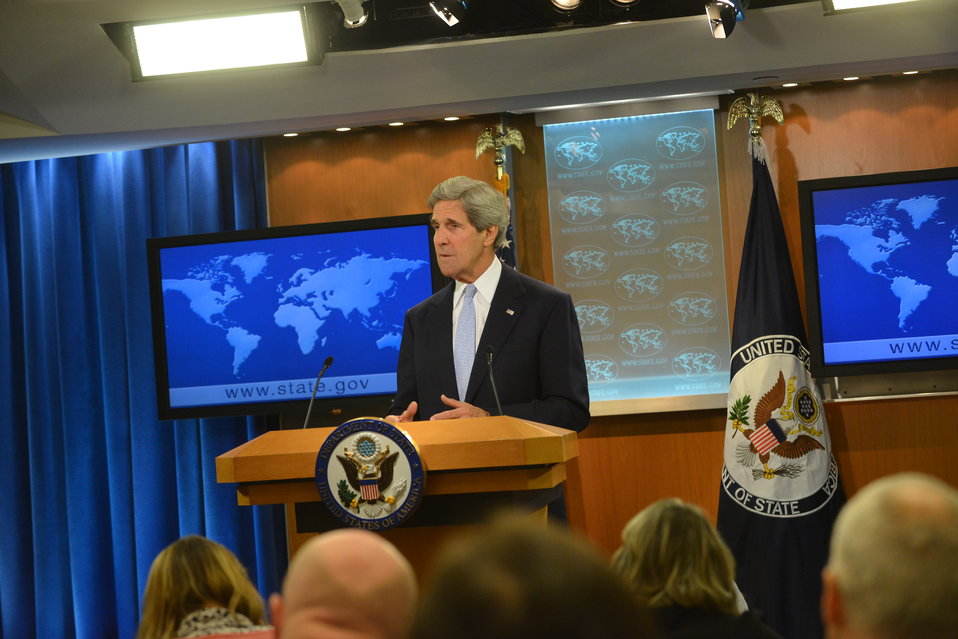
Secretary Kerry Announces the Appointment of Russ Feingold as the Special Envoy for the African Great Lakes Region and the Democratic Republic of the Congo

U.S. Secretary of State John Kerry announces the appointment of Russ Feingold as the new U.S. Special Envoy for the African Great Lakes region and the Democratic Republic of the Congo at the U.S. Department of State in Washington, D.C., on June 18, 2013.